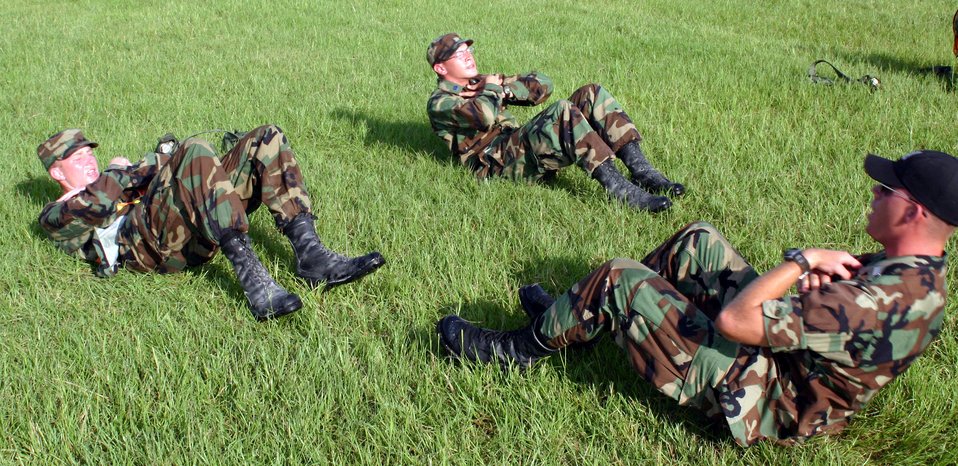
ROTC cadets complete 'Props and Wings Challenge'

ROTC Cadets John Whitehouse (left) and Timothy Penn perform sit-ups while Cadet Training Assistant Andrew Glowa motivates them to finish July 17 during the physical fitness test portion of the Props and Wings Challenge at Maxwell Air Force Base, Ala. The challenge tested more than 330 cadets with mental and physical activities during the 27-day field training event.